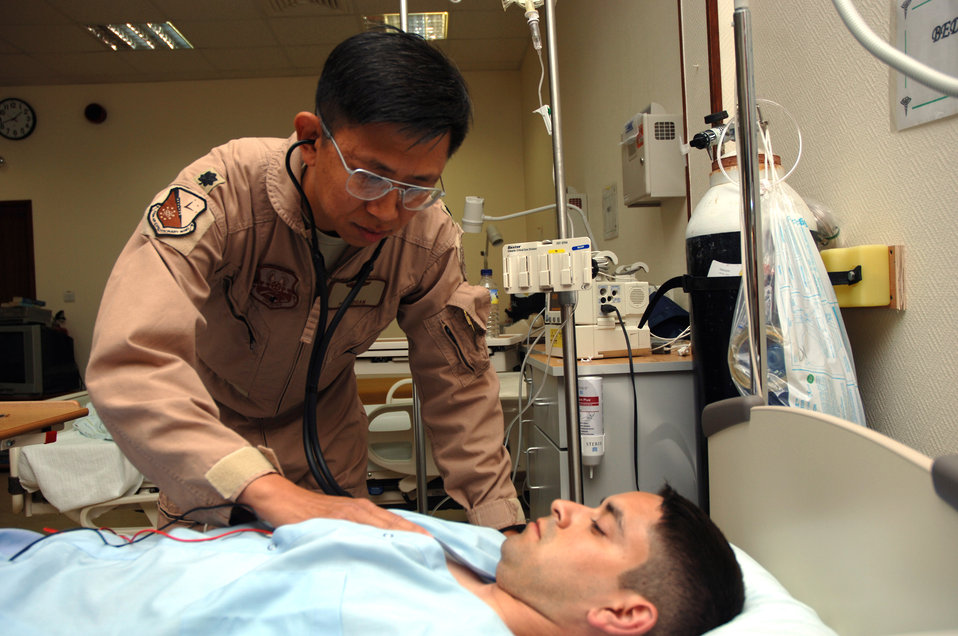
Surviving Vietnam War steered doctor to save lives

Lt. Col. (Dr.) Paul Doan, chief of aerospace medicine for the 379th Expeditionary Medical Group in Southwest Asia, evaluates Roberto Leal. Dr. Doan is a former war refugee from Vietnam. He is deployed from Barksdale Air Force Base, La.